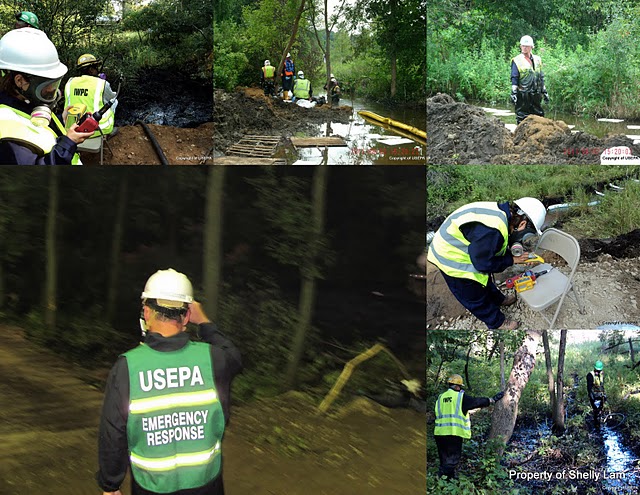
Air Monitoring

EPA responders and contractors conducting air monitoring operations at the spill site adjacent to Talmadge Creek near Marshall, Michigan. Initial air monitoring revealed high levels of benzene requiring personal protective equipment at the spill site.